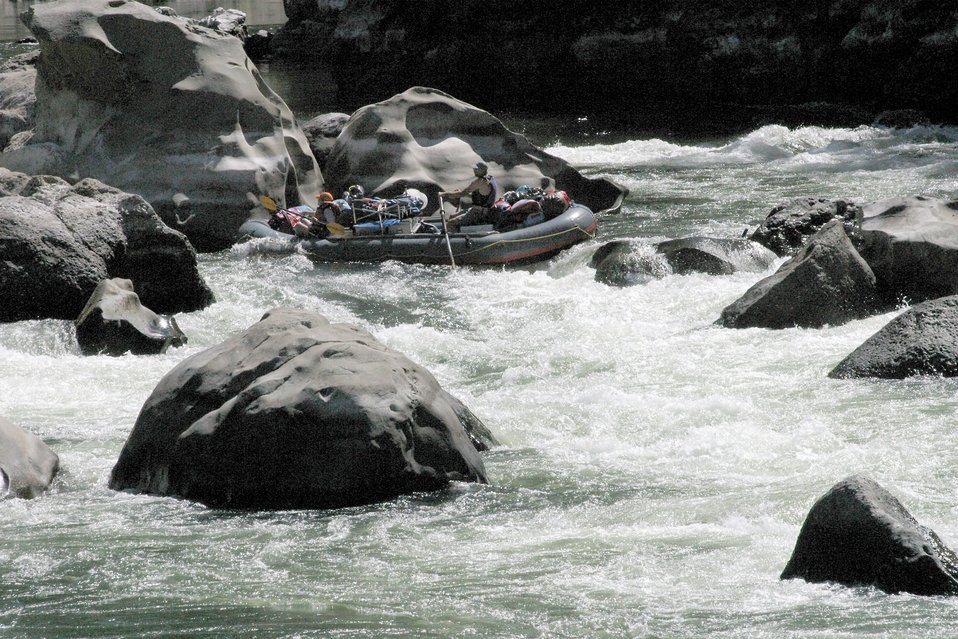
Boaters negotiate Blossom Rapids.